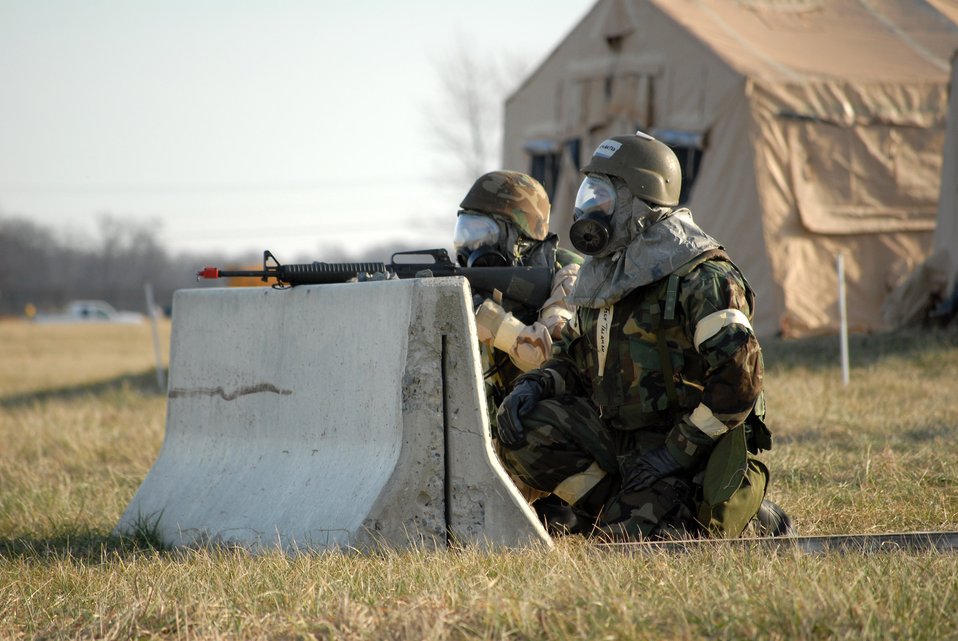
Dover exercise tests Airmen's combat environment skills

Tech. Sgt. Jesse Talamantes and Staff Sgt. Andrew Gassner seek protection behind a concrete barrier during Exercise Haunted House Battle Ax Jan. 7 at Dover Air Force Base, Del. Defensive measures was one of the many skills practiced during the exercise. Sergeant Talamantes and Sergeant Gassner are assigned to the 9th Airlift Squadron.